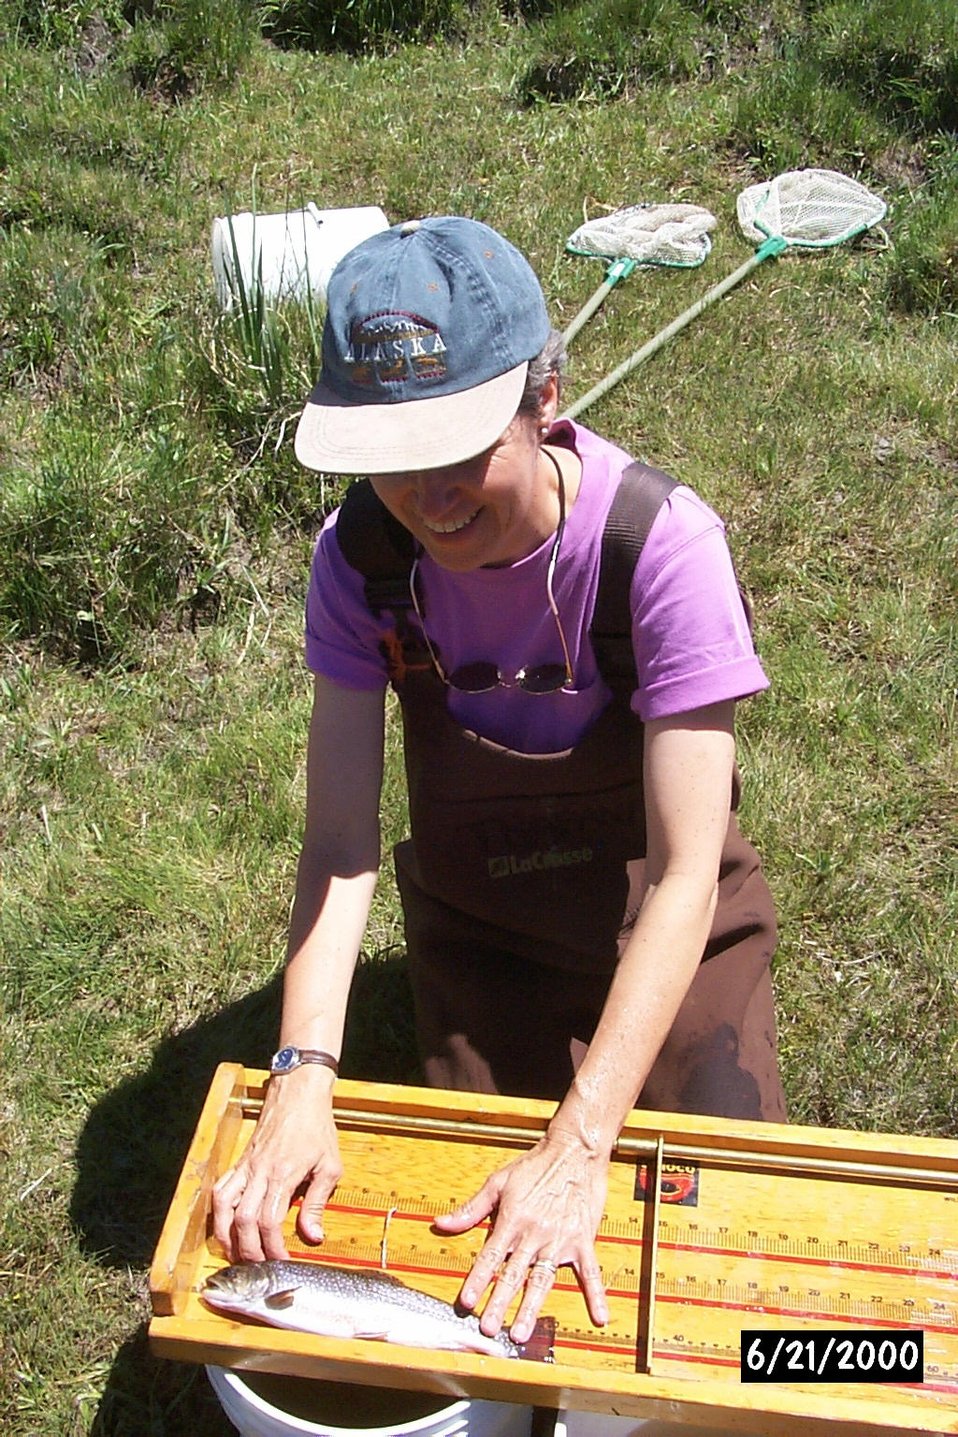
People Salmon Field Office UCSC Upper Columbia Salmon Clearwater District